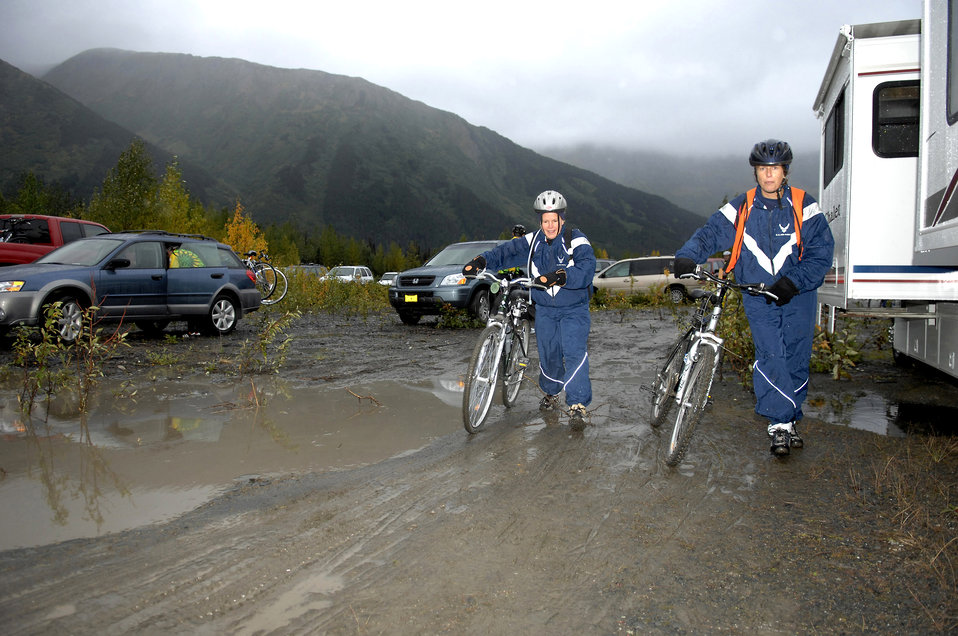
Arctic Warriors join battle against MS

Maj. Julie Ostrand and Capt. Wendy Koehler dodge mud and water as they arrive in Seward after completing the first leg of the Alaska Multiple Sclerosis Bike Ride Sept. 8 along a section of the Seward Highway in the Kenai Peninsula, Alaska. The ride took participants from Mile 63 on the Kenai Peninsula along the Seward Highway to Seward, Alaska. Consistent and sometimes heavy rains didn't prevent Major Ostrand and Captain Koehler, both nurse practitioners at the 3rd Medical Group, and other Airmen from Elmendorf Air Force Base, Alaska, from completing the ride, which took place Sept. 8 and 9. People who took the 126-mile, round-trip ride saw extreme elevation gains challenging even the most experienced of the 200 riders. All proceeds from this event went to the National Multiple Sclerosis Society.